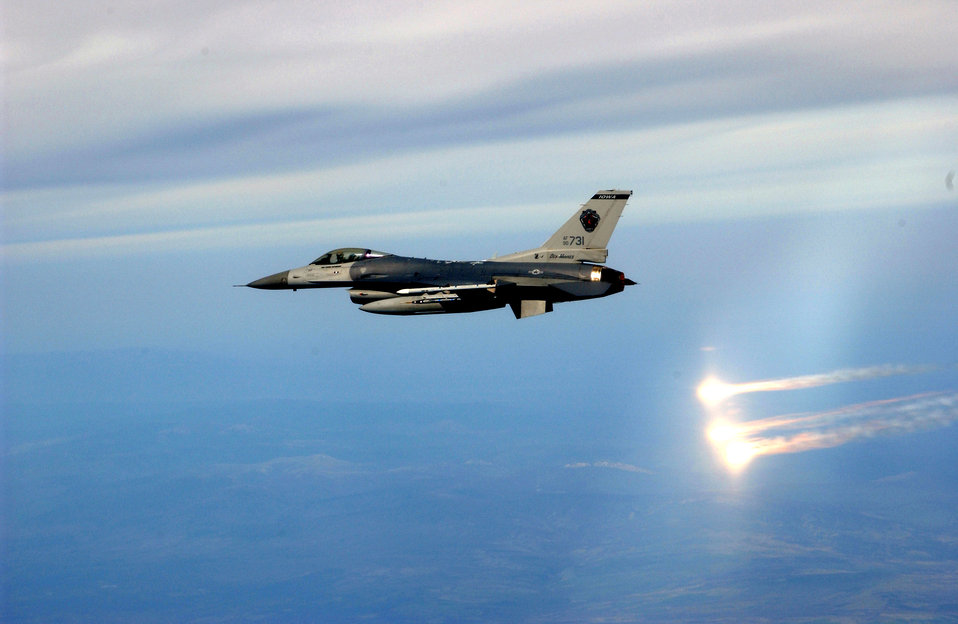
Fighting Falcon shines at Northern Edge

An F-16 Fighting Falcon from the Ohio National Guard's 180th Fighter Wing drops flares while performing manuevers at Exercise Northern Edge '06 at Eielson Air Force Base, Alaska, on Friday, June 9, 2006. Northern Edge '06 is a joint training exercise hosted by Alaskan Command.